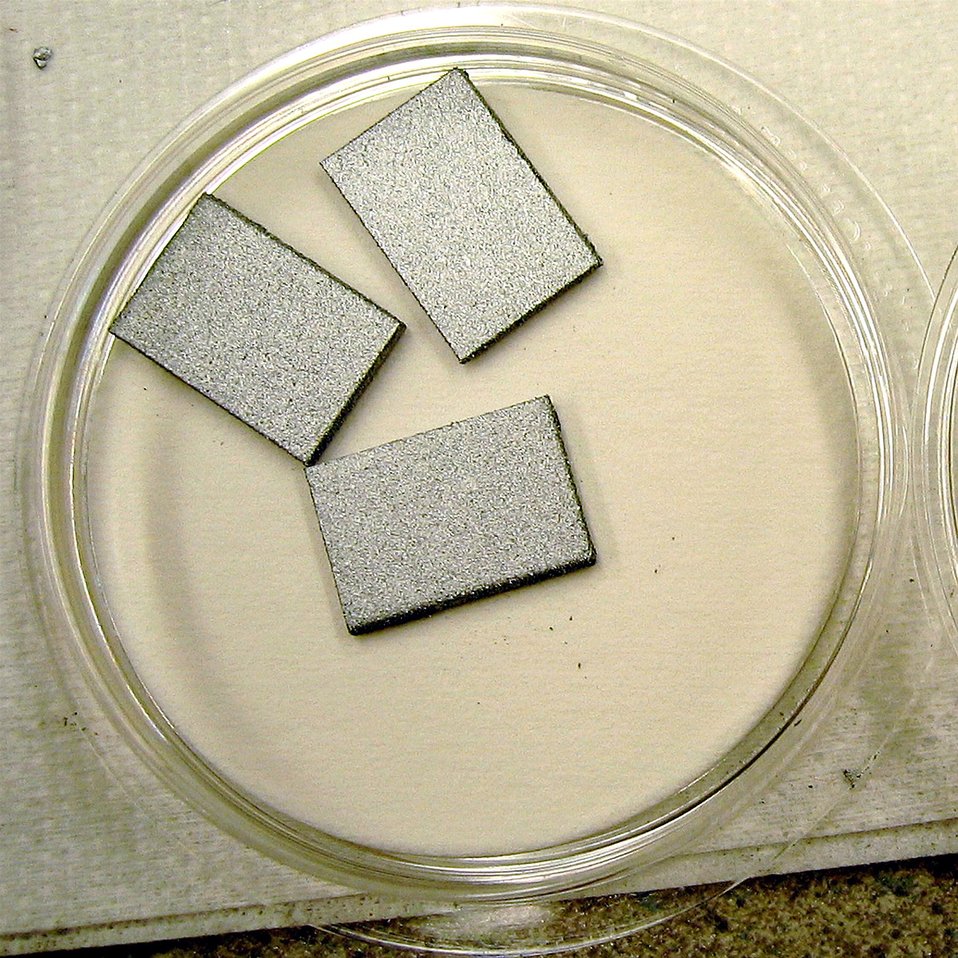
Researchers at Pacific Northwest National Laboratory have developed a ceramic-based aluminide coating that protects steel and superalloys against corrosion, oxidation and other adverse chemical reactions.

The coating is economical, easy to apply and does not chip off. Coated coupons of 316 stainless steel are shown after being spray coated with a hand-held spray gun. In the as-sprayed condition the coatings are very fragile and require careful handling until cross-linked and fired.